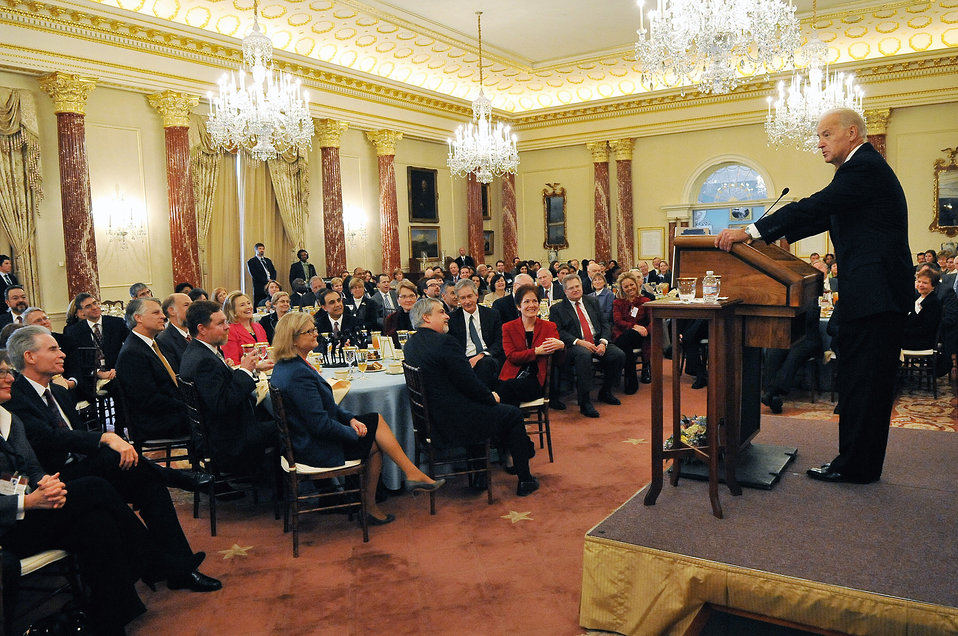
Vice President Biden Delivers Remarks

U.S. Vice President Joseph Biden delivers remarks at the 2011 Global Chiefs of Mission Conference at the U.S. Department of State in Washington, D.C., on January 3, 2011.